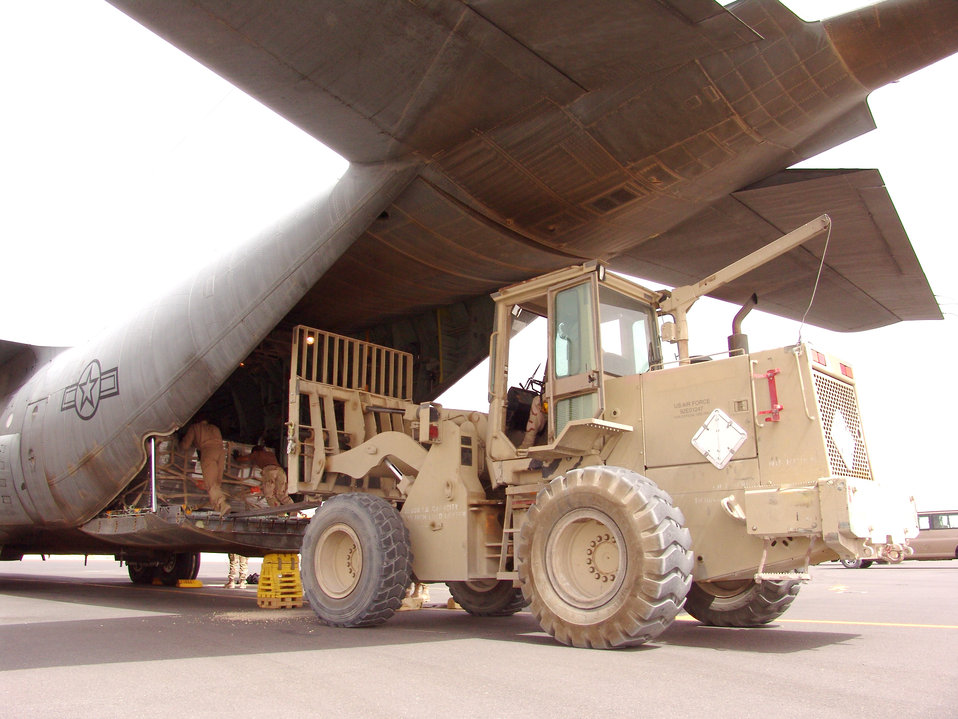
Ready for takeoff

SOUTHWEST ASIA -- Staff Sgt. Albert Keomaka operates a forklift to load pallets into a C-130 Hercules destined for Kirkuk Air Base, Iraq. The 386th Air Expeditionary Wing is responsible for tactical airlift into and out of Iraq supporting Operation Iraqi Freedom. Sergeant Keomaka is an air transportation specialist with the 386th Expeditionary Logistics Readiness Squadron at a forward-deployed location and is from Hickam Air Force Base, Hawaii.